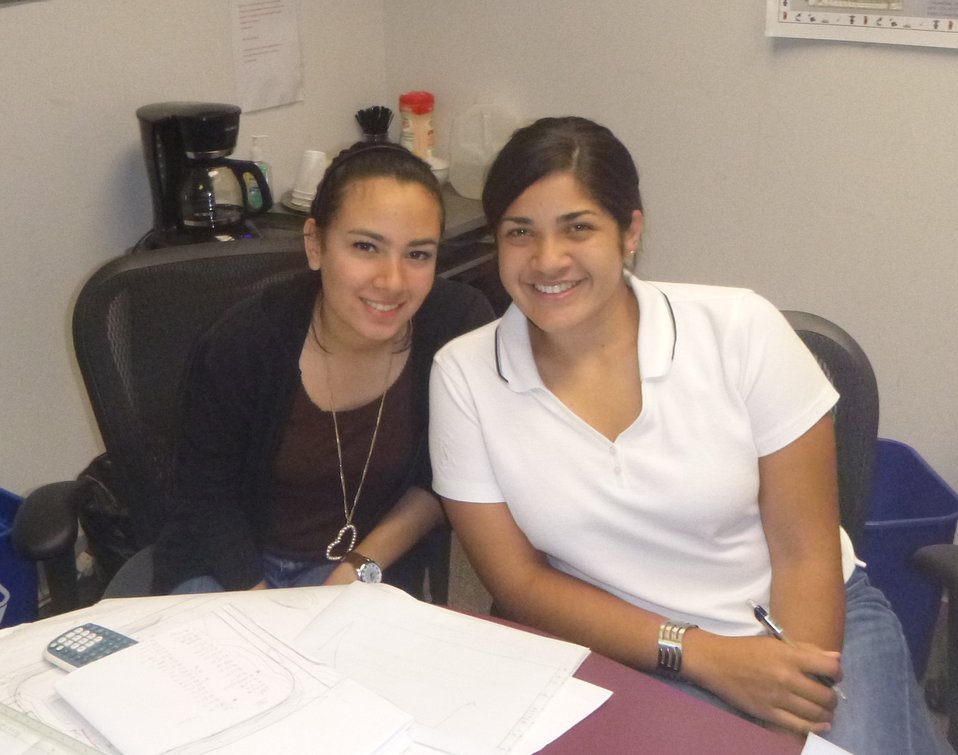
Hanniah and Angeliz

Interns Hanniah Rodriguez (left) and Angeliz Vangas. They were instrumental in developing an application for a $7 million grant to repair many of the damaged roads in the National Forests in North Carolina.